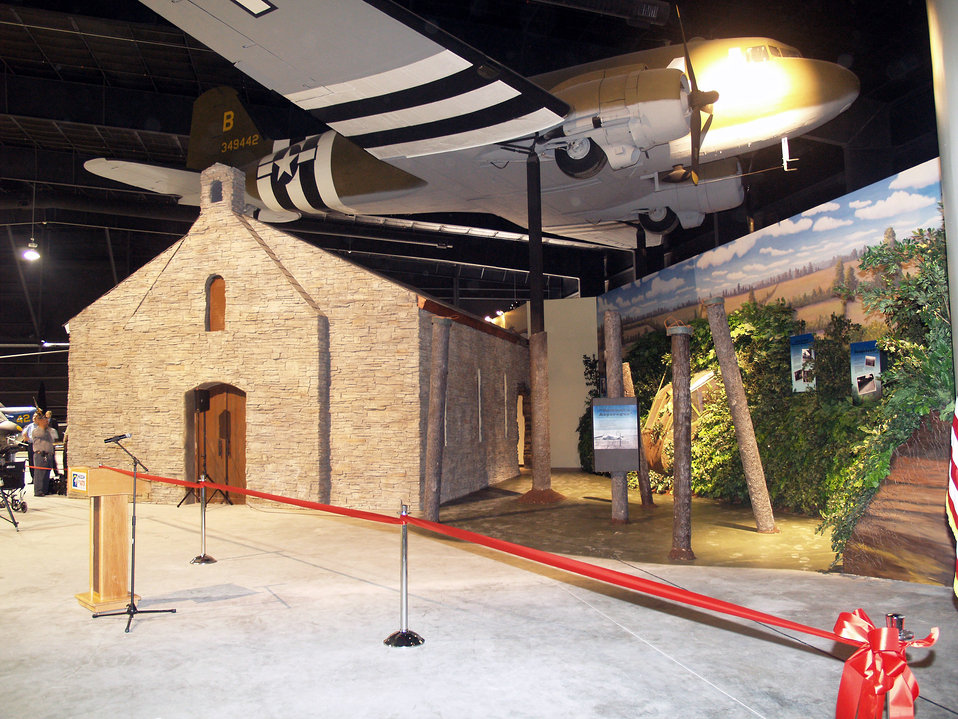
Museum of Aviation opens D-Day exhibit

Curators of the Museum of Aviation in Warner Robins, Ga., opened a new D-Day exhibit Oct. 17. The exhibit is a sight-and-sound interactive display showing how American and allied military forces planned and executed the operation. The 6,000 square foot exhibit includes a C-47 aircraft